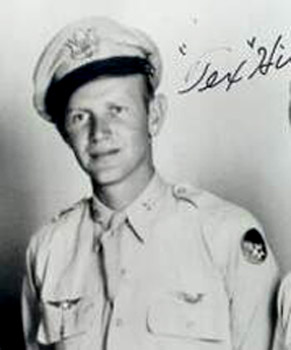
Famed Flying Tiger ace dies

Famed Flying Tigers ace and Texas Air National Guardsman Brig. Gen. David Lee